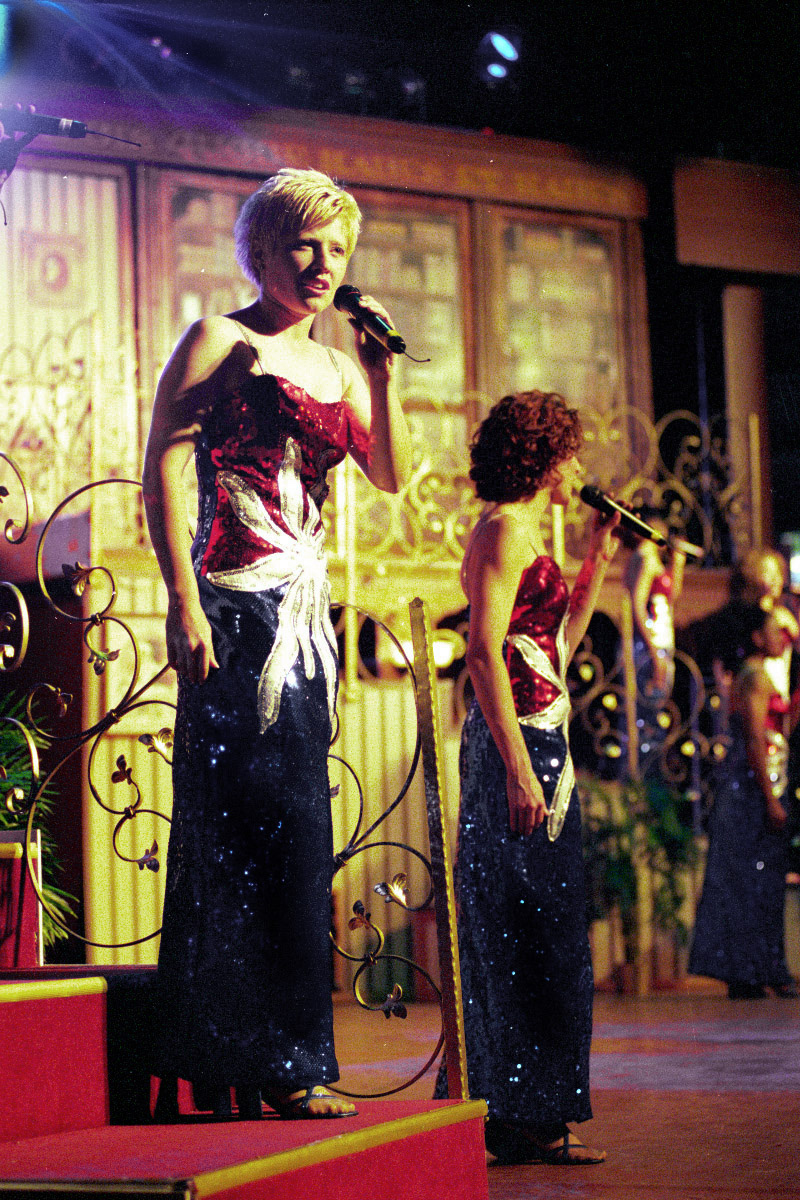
Tops In Blue

SAN ANTONIO -- First Lt. Joni Grunewald and Senior Airman Michelle Brown sing the classic Lee Greenwood song Proud to Be an American during a special performance by the Air Force's Tops In Blue Oct. 13 at Sea World San Antonio. Tops In Blue consists of members of the Air Force who act as ambassadors of the service bringing entertainment and the Air Force message to military members, their families, friends and civilian communities around the world.